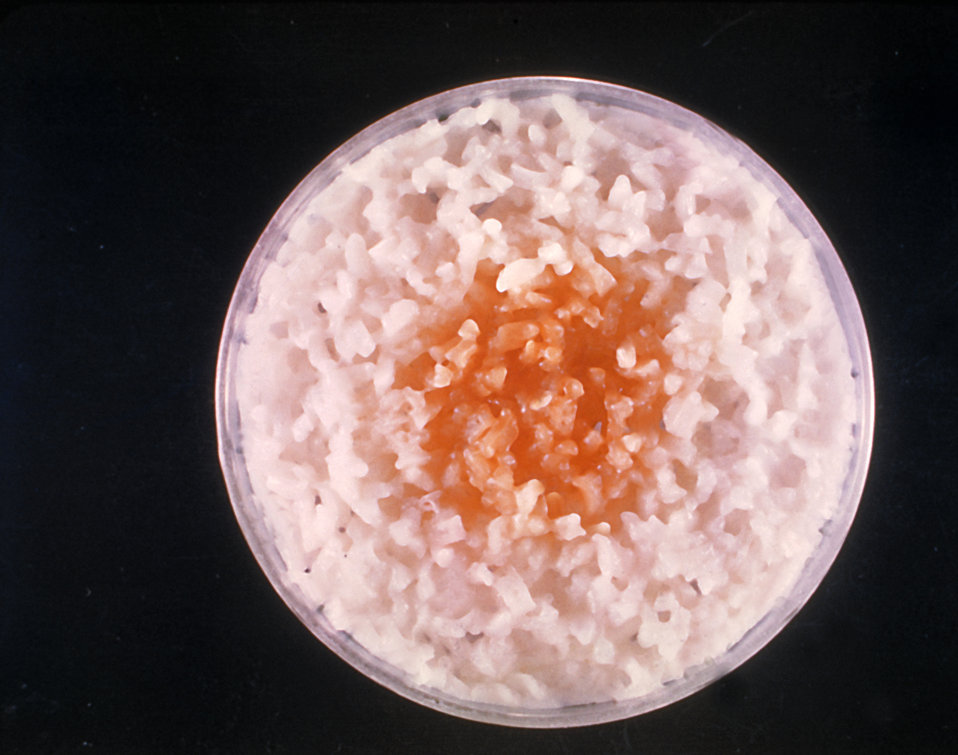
This image shows a culture of Microsporum audouinii growing poorly on boiled polished rice grains.